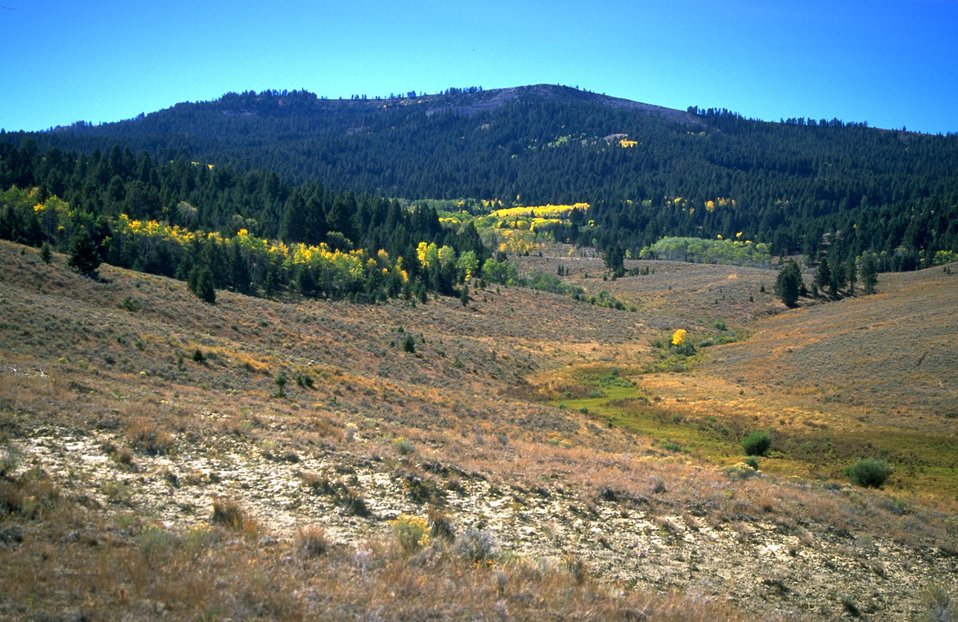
Meadow with Aspen in background